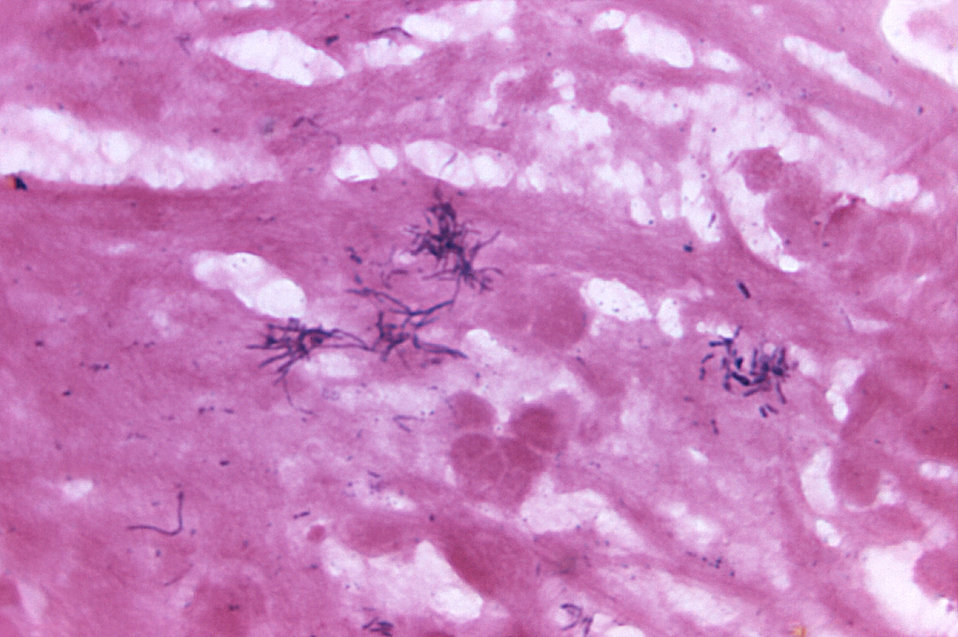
Magnified 1800X, this Gram-stained photomicrograph revealed the presence of rod-shaped, Gram-positive Actinomyces odontolyticus bacteria that were found in a smear from a brain abscess. Note the hyphae, or branched chains of bacteria, giving these a fungal appearance.